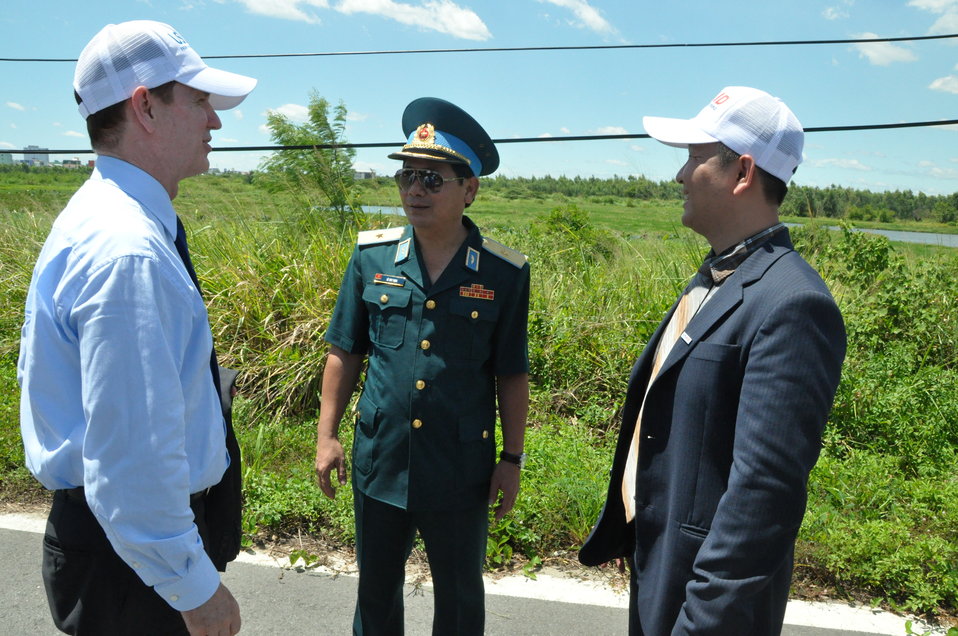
Touring the Danang Airport site with project launch participants

Danang, August 9, 2012